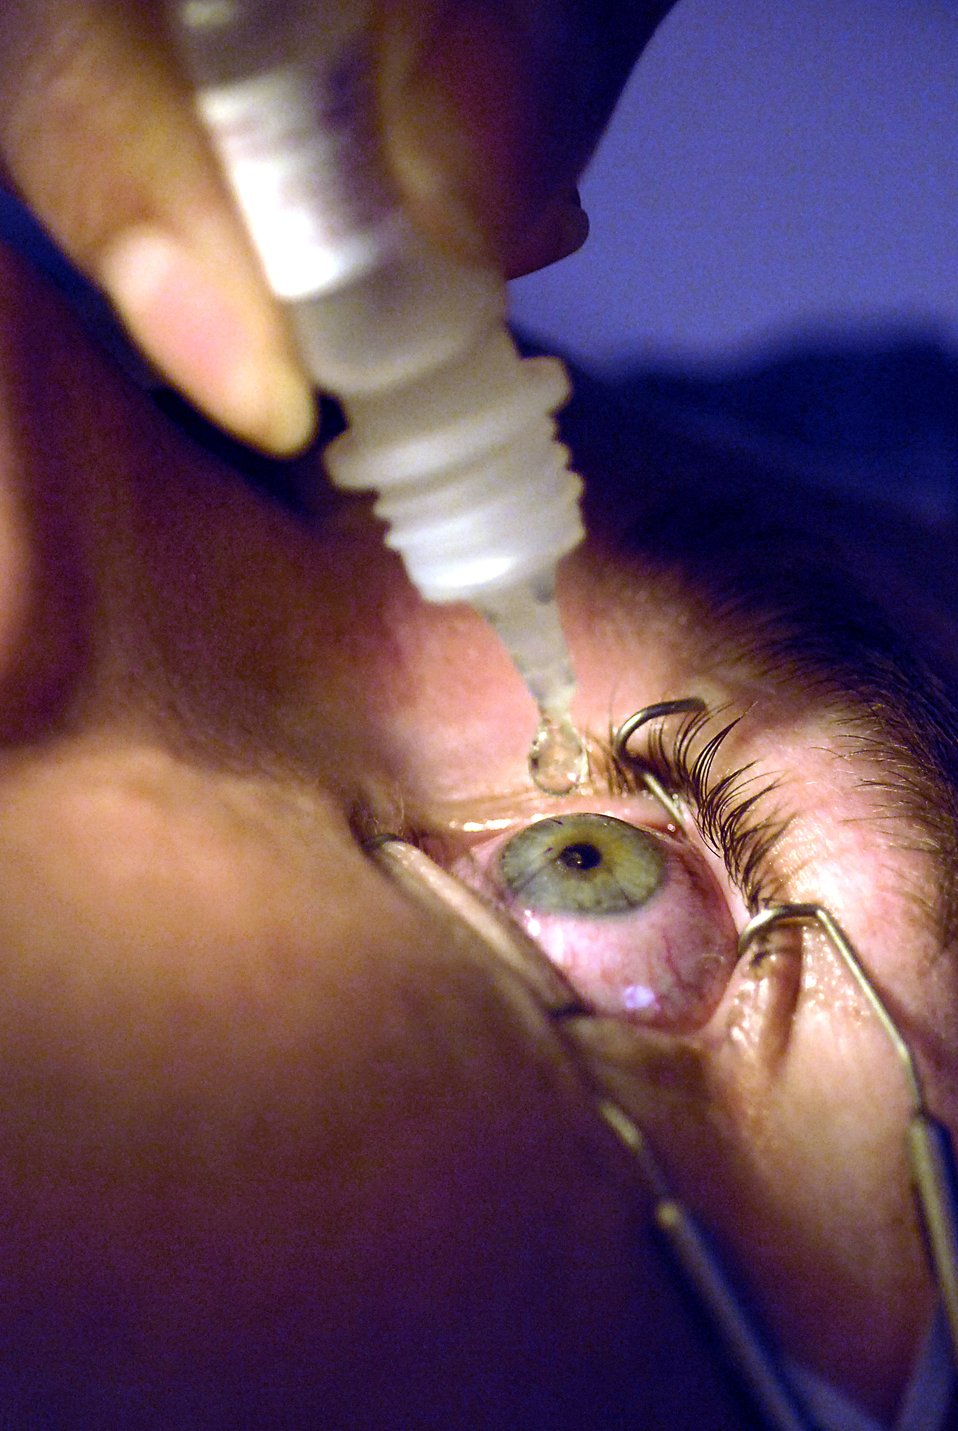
Wilford Hall opens Joint Warfighter Refractive Surgery Center

Lt. Col. Charles Reilly drops solution into Senior Airman John Paul Marsh's eye just after laser eye surgery Aug. 23 at the newly opened Defense Department Joint Warfighter Refractive Surgery Center at Lackland Air Force Base, Texas. Colonel Reilly is the chief of the Warfighter Refractive Surgery Center and Airman Marsh is with the Air Force Band of the West.